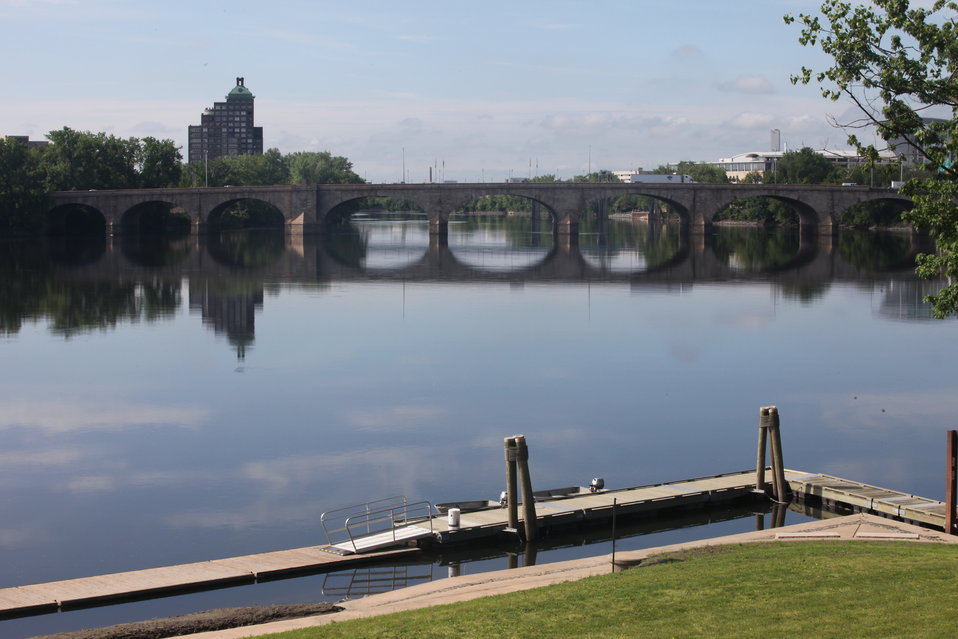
River view

View from the Connecticut River Community Boathouse, site of the Department of Interior Blueway designation signing event held on May 24, 2012. The Connecticut River is the first river in the nation to be named a 'Blueway'.